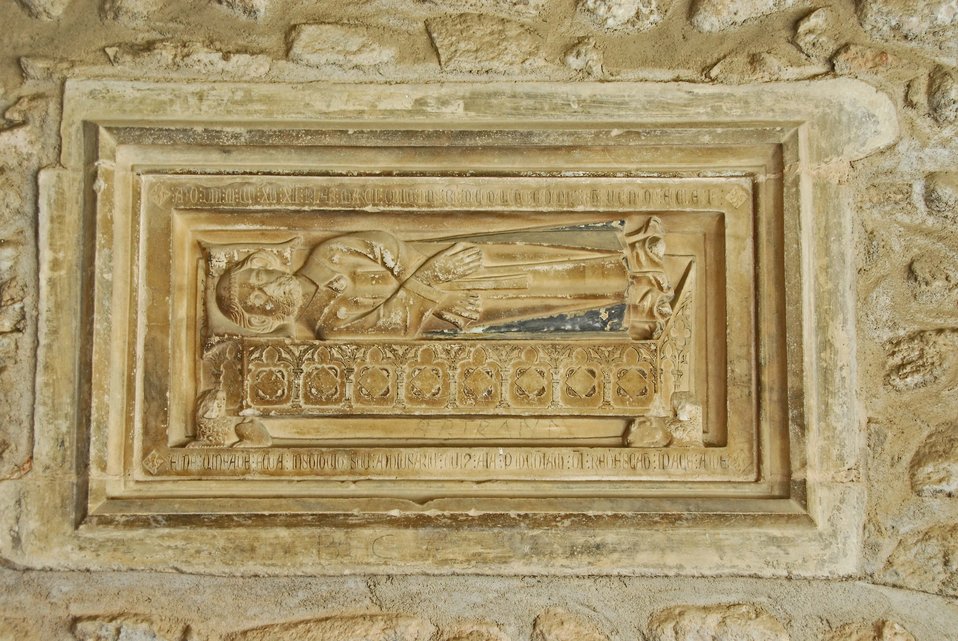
Deutsch: Ste-Eulalie-et-Ste-Julie d’Elne, Tafel in Südgalerie,Srkophag mit Verstorbenem